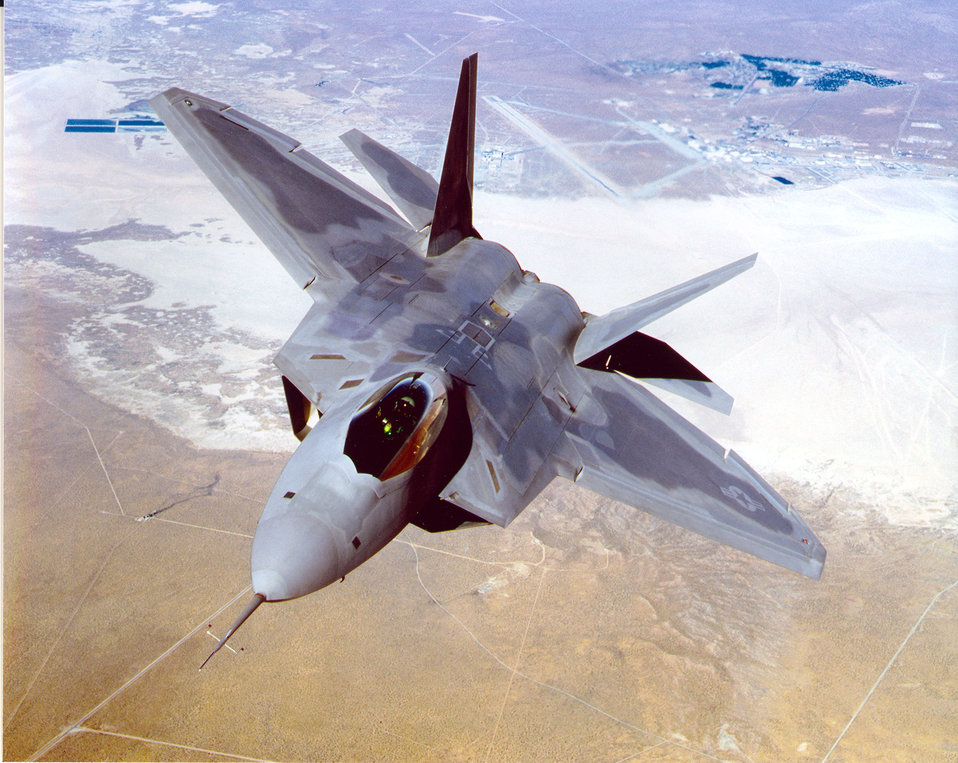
F-22 Raptor demonstrates manueverability

Combining stealth, manueverability and supercruise with fully integrated systems, the F-22 Raptor has redefined